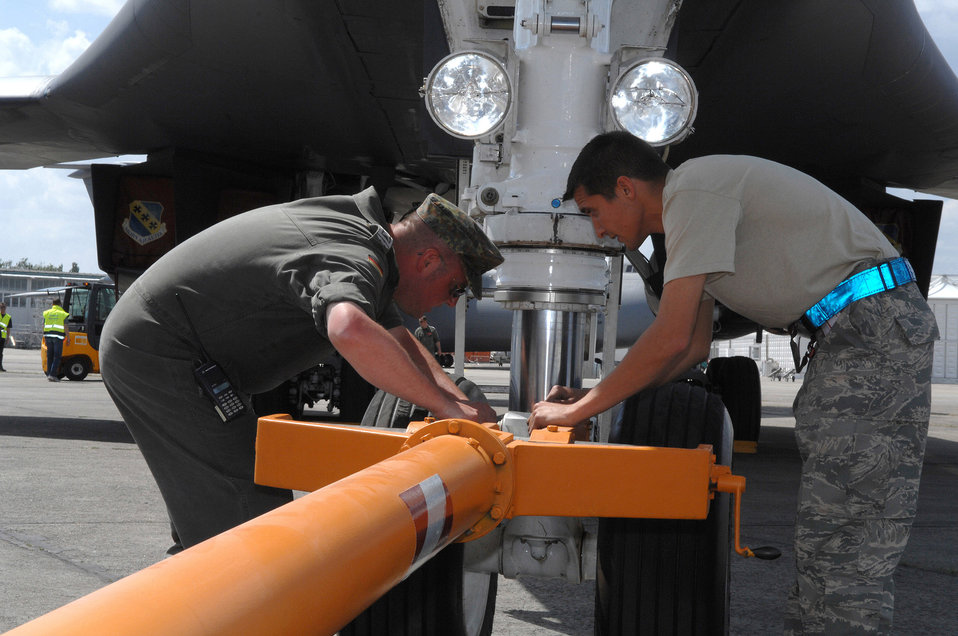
Airmen prepare for 2008 Berlin Air Show

Senior Airman Marcus Smith (right) and German air force Master Sgt. Martin Ludwig prepare a B-1B Lancer bomber aircraft from the 7th Bomb Wing at Dyess Air Force Base, Texas, for towing during preparations for the 2008 Berlin Air Show here May 24. Airman Smith is an aircraft maintenance crew chief from the 7th Aircraft Maintenance Squadron at Dyess AFB.